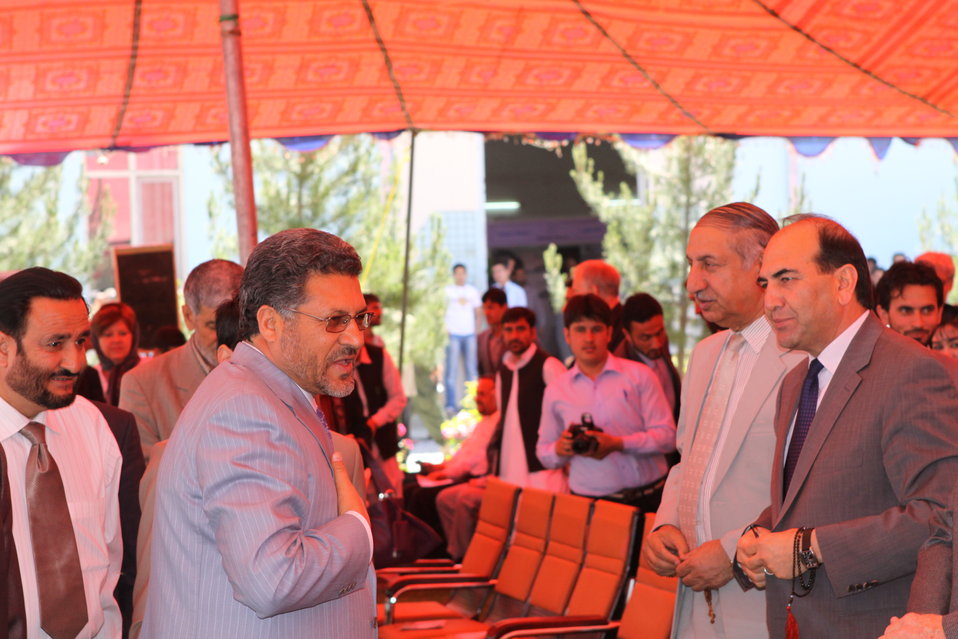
100522 ATVI Graduation 026